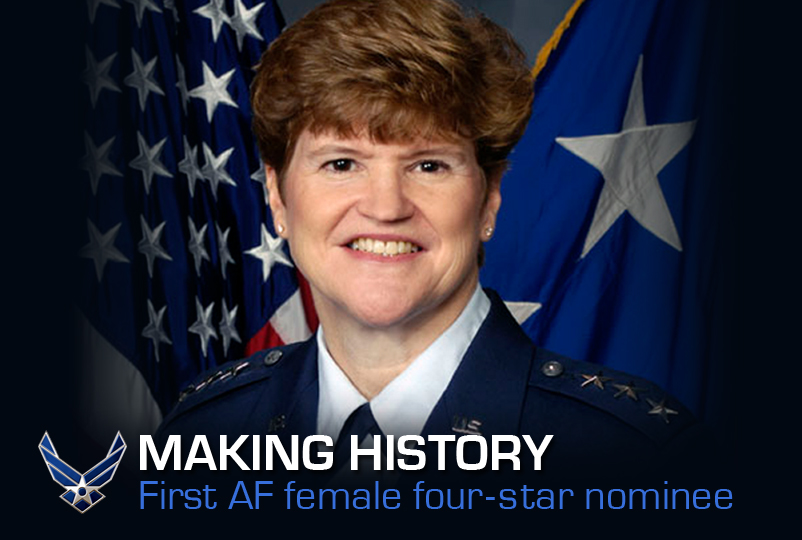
Making History